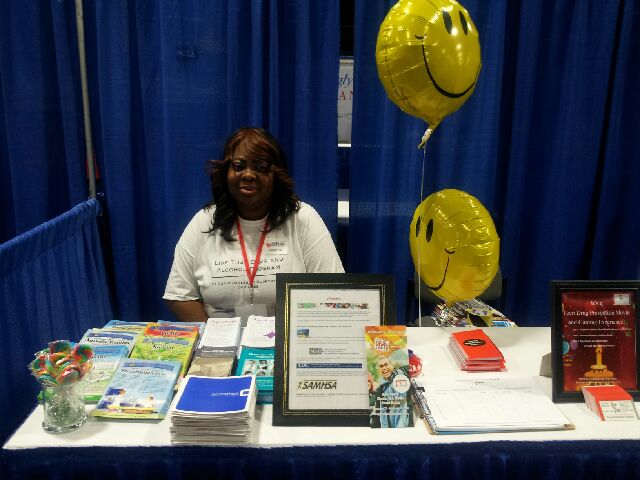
NBC4 Health and Wellness Expo January 11-12, 2014